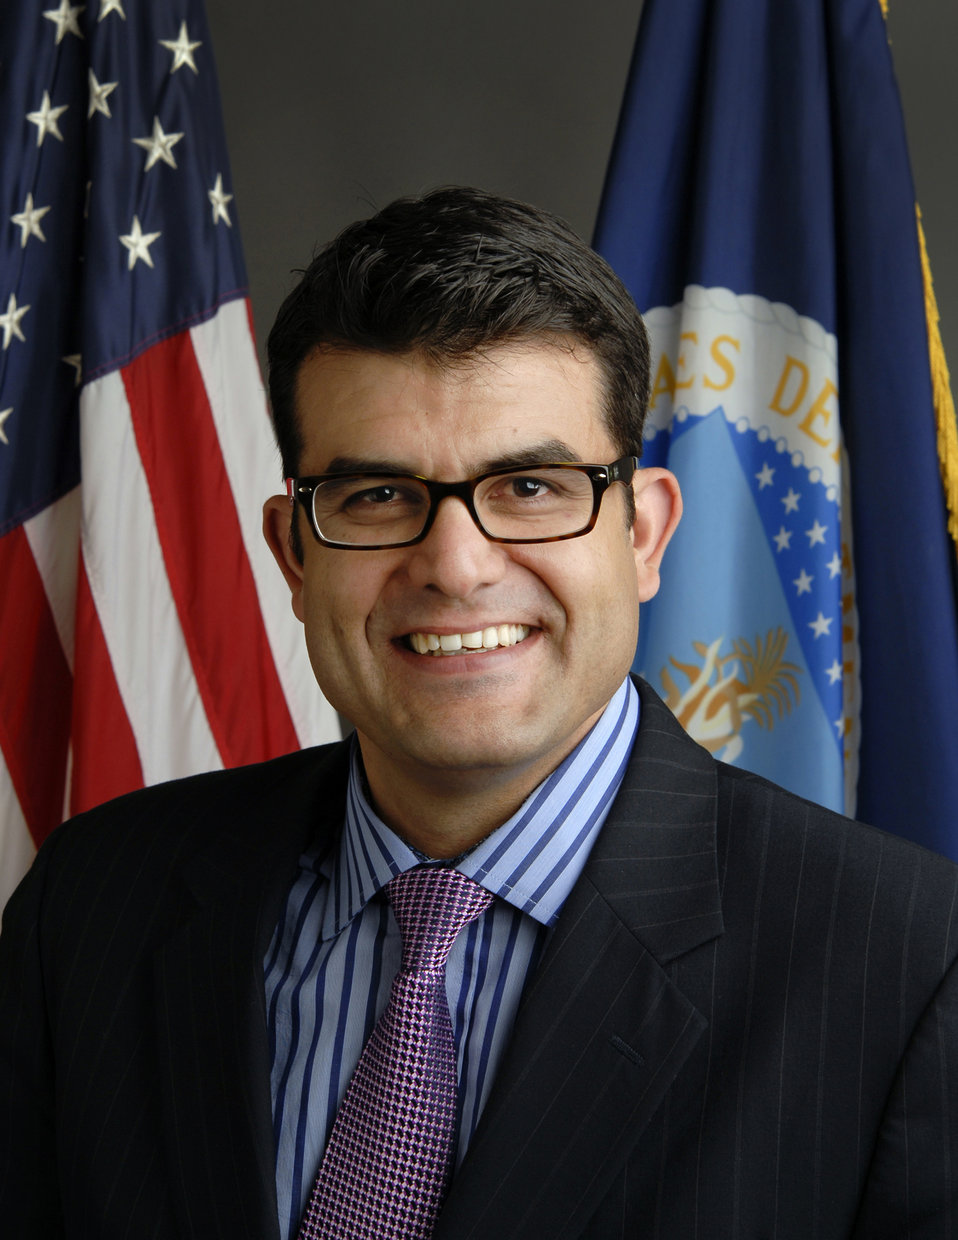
20120510-RD-KJH-0016 Administrator Rural Business-Cooperative Service John Padalino

John Padalino, Administrator Rural Business-Cooperative Service (RBCS).